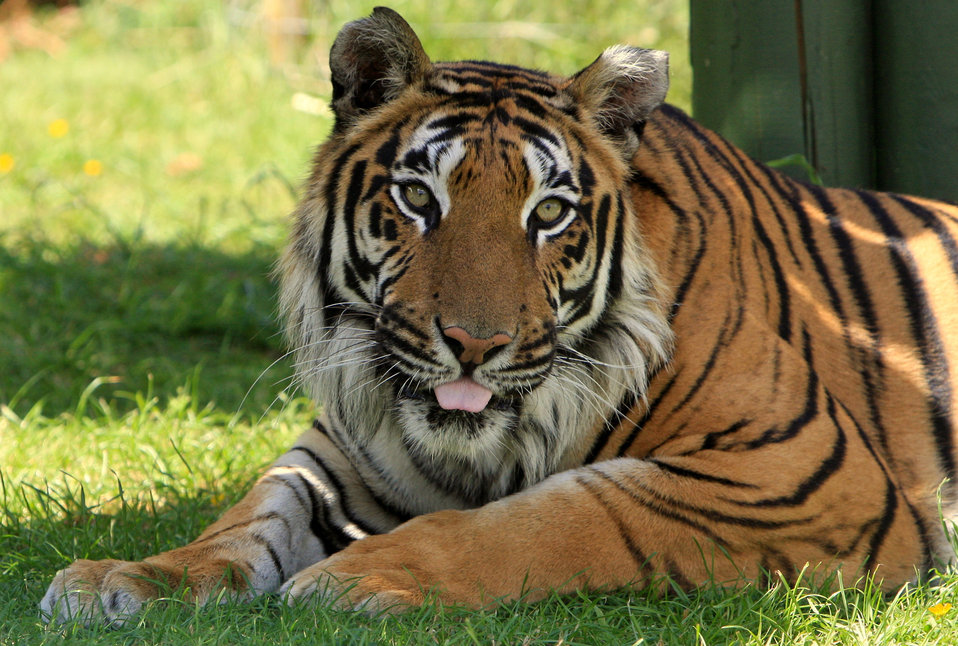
Tiger

Beautiful portrait of a fully grown male tiger photo.